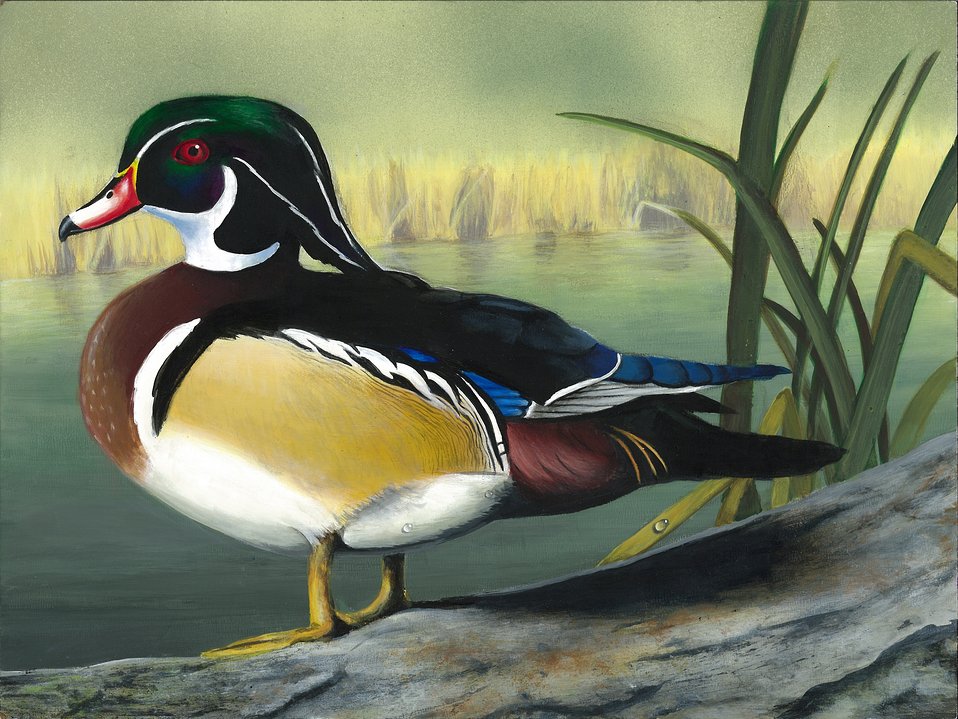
Oregon

2012 Jr Duck Stamp Program
State Best of Show
Oregon